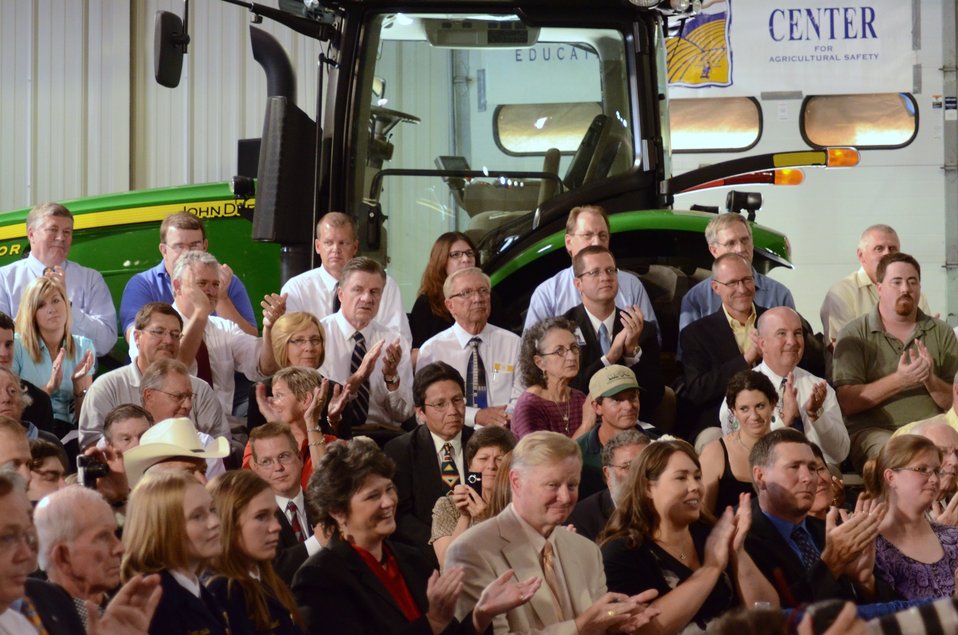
Members of the audience react to President Barack Obama speaking at the Northeast Iowa Community College, for a White House Rural Economic Forum on Tuesday, Aug. 16, 2011. The President’s visit will focus on agriculture’s contribution to the national economy, and how to create more jobs in rural America.